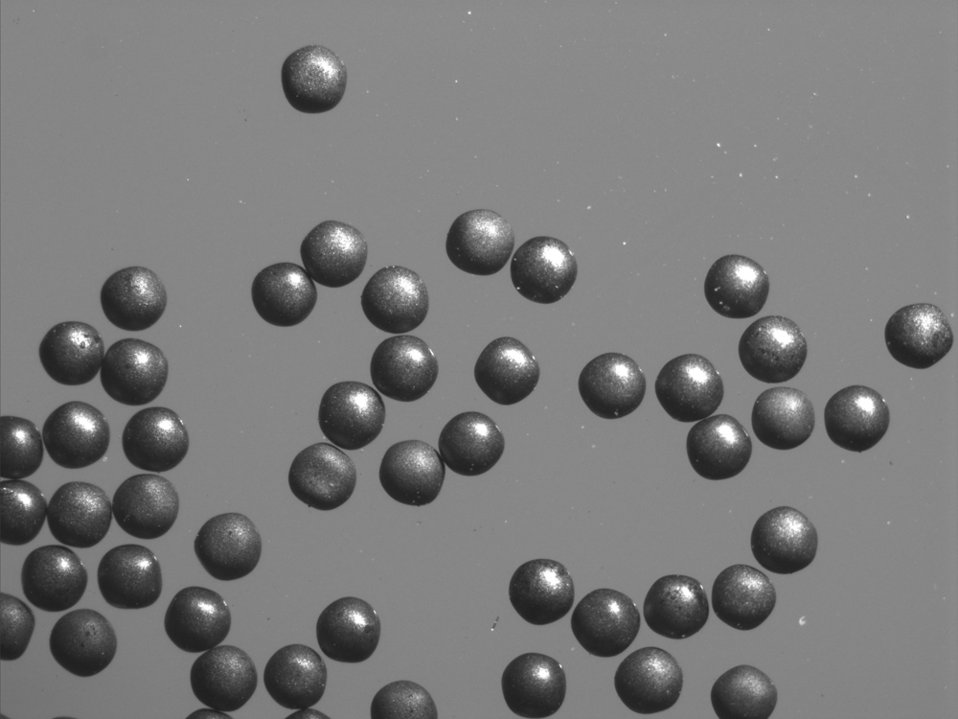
INDIVIDUAL TRISO PARTICLES AT 500UM SCALE AT IDAHO NATIONAL LABORATORY.

TRISO fuel particles are the size of poppy seeds. Break one open and it looks like tiny jaw-breakers. An outer shell of carbon coats a layer of silicon carbide, which coats another layer of carbon and the uranium center- where the energy-releasing fission happens. By-products of the fission process have the potential to escape the fuel, especially at very high temperatures. Even at 1,800, which each boast their own primary containment system.